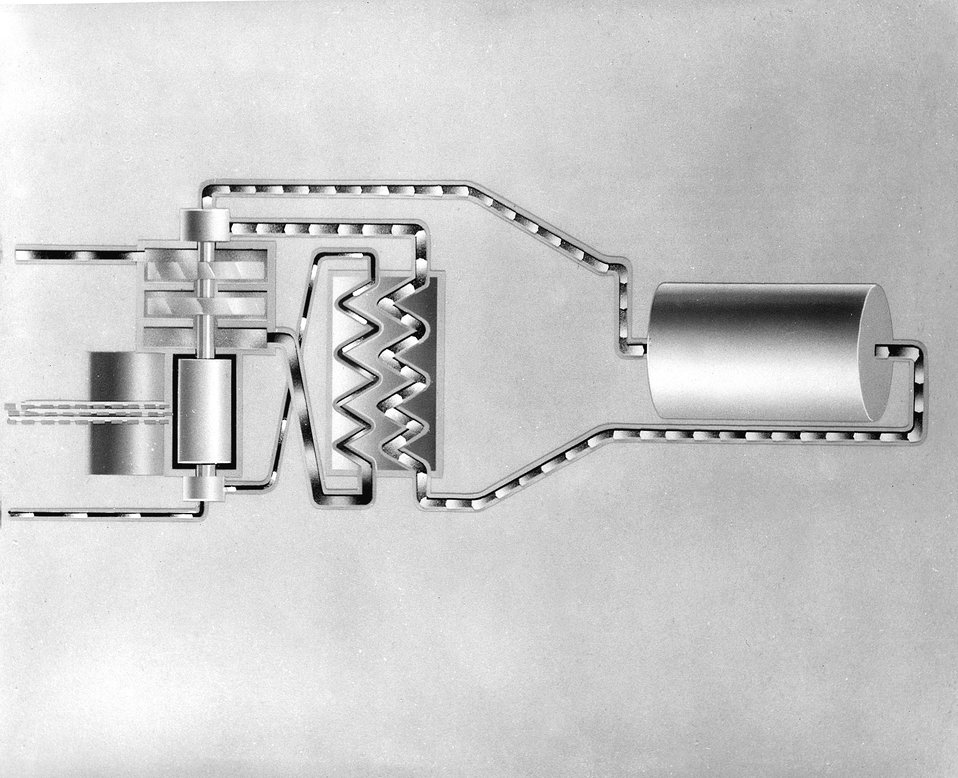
In the SNAP-2 systems liquid sodium potassium flows through the nuclear reactor, passes through a boiler super heater where the heat is transferred to the secondary mercury coolant systems and is piped back to the reactor.